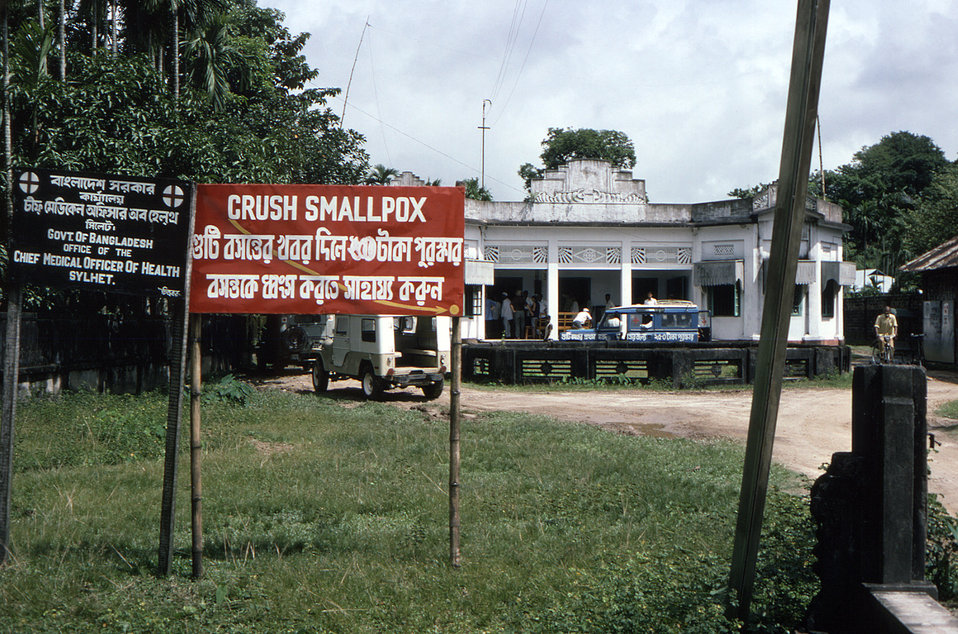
This historic image was captured during the smallpox eradication efforts of the 1970s, which successfully rid the World of this disease, and depicted a District Health Office, which was situated in the north-eastern Bangladesh city of Sylhet.